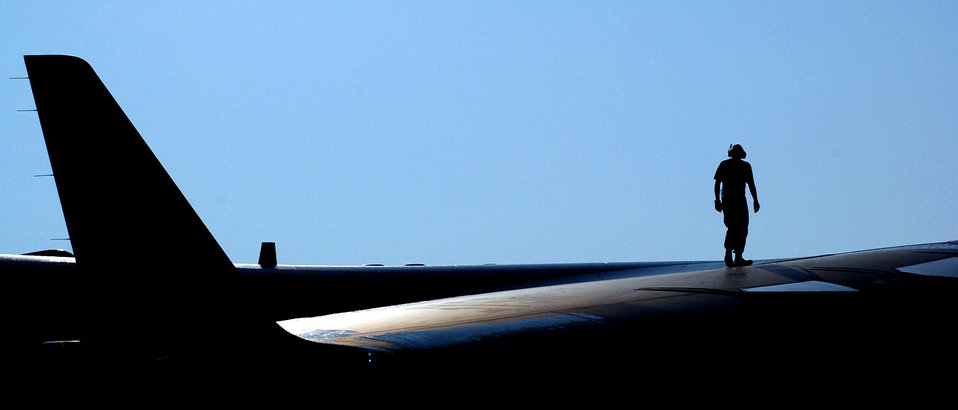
Everything looks good

An Airman from the 4th Airlift Squadron, McChord Air Force Base, Wash., makes a routine check on a C-17 Globemaster III July 30 at Kadena Air Base, Japan.